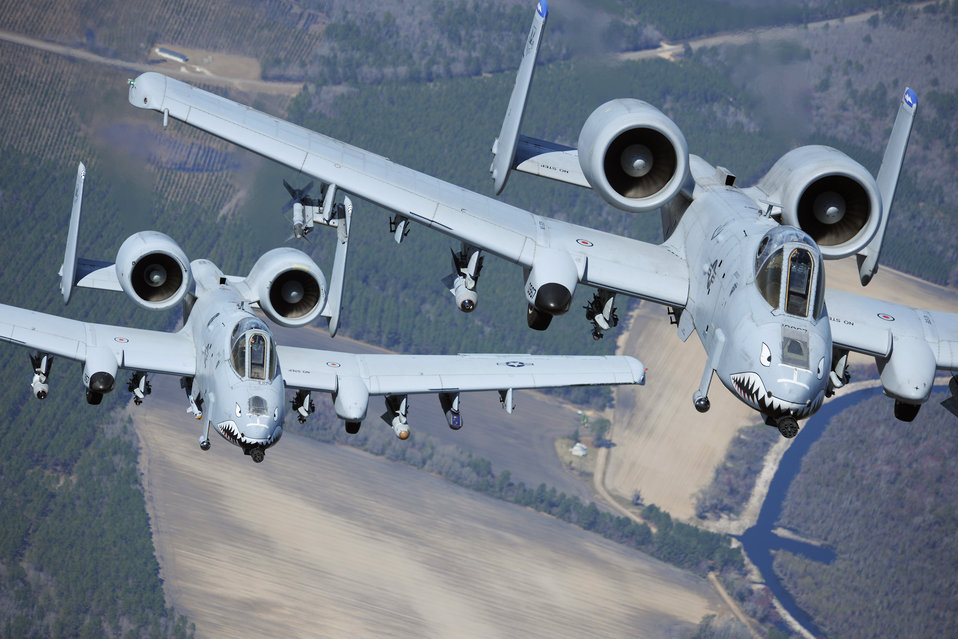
Fighter squadron produces 205 Sorties

Two A-10C Thunderbolt II aircraft pilots fly in formation during a training exercise March 16, 2020, at Moody Air Force, Ga. Members of the 74th Fighter Squadron performed surge operations to push its support function to the limit and simulate pilots' wartime flying rates.